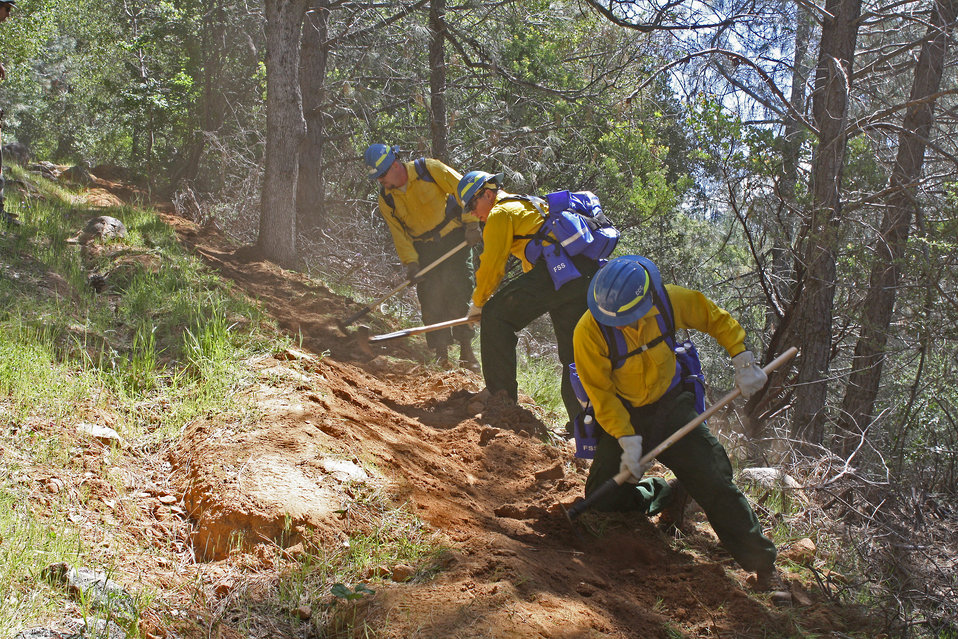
Vets2-a

Firefighter trainees dig out a fire line during the Forest Service and California Conservation Corps joint training session at a National Forest in California on Apr. 16, 2013. The U.S. Forest Service has partnered with the California Conservation Corps to provide firefighter training for military veterans and to date 100 military veterans have been trained as firefighters.